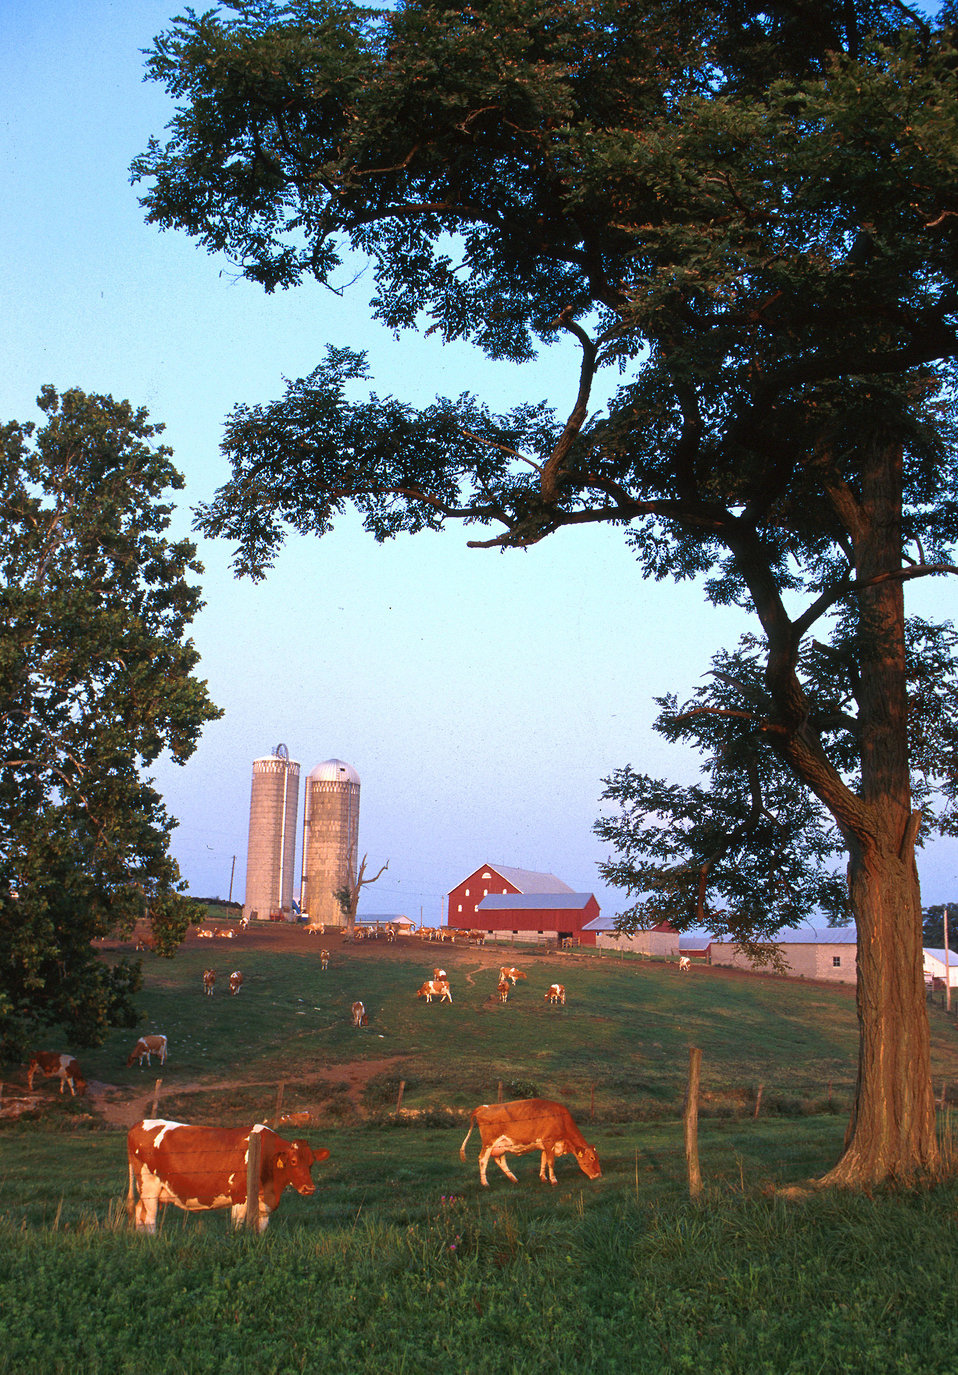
A small dairy farm in western Maryland sits in the setting sun. The U.S. Department of Agriculture (USDA) defines 'small farms' as those averaging $50,000 in gross sales annually that net, on average, around $23,159.